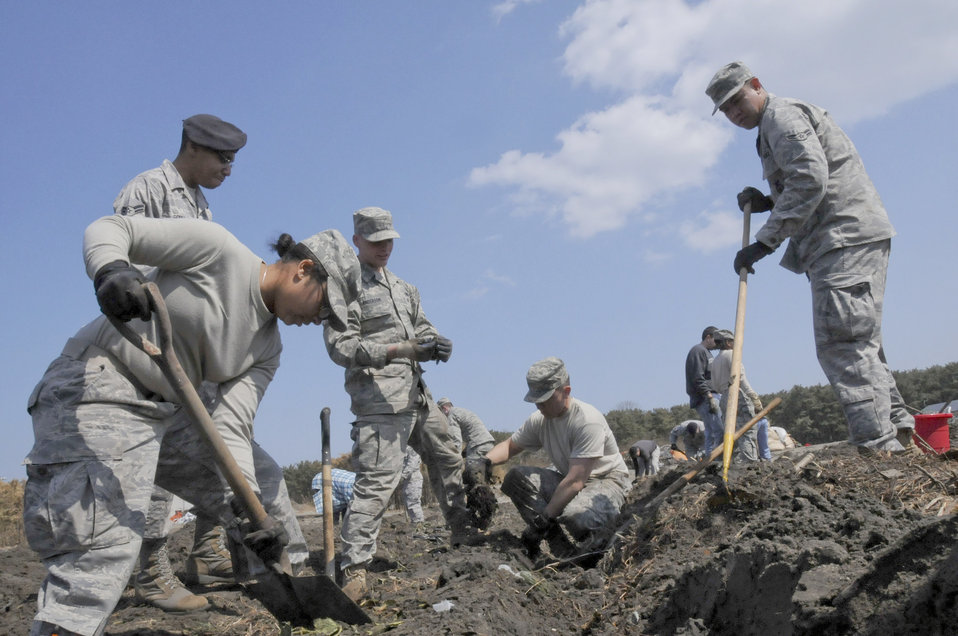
Misawa helps

Airmen uncover rows of strawberries April 1, 2011, at a farm in Hachinohe, Japan.